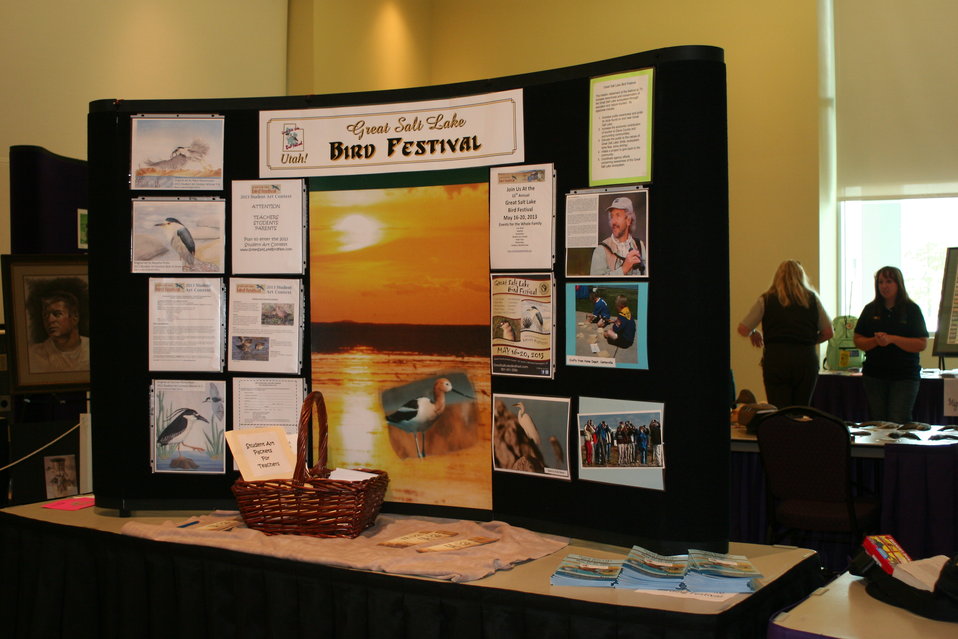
Outreach

Photo Credit: Suzanne Fellows / USFWS
The U.S. Fish & Wildlife Service sponsored the 2012 Federal Duck Stamp Art Contest September 28 and 29 in Ogden, Utah, at Weber State University. A panel of five judges was responsible for choosing the art work used to design the 2013-2014 Migratory Bird Hunting and Conservation Stamp.